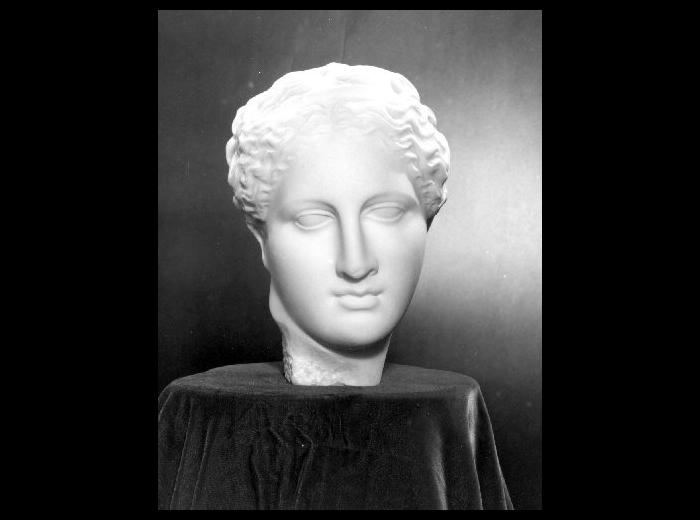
Bust of Hygeia, Goddess of Health.